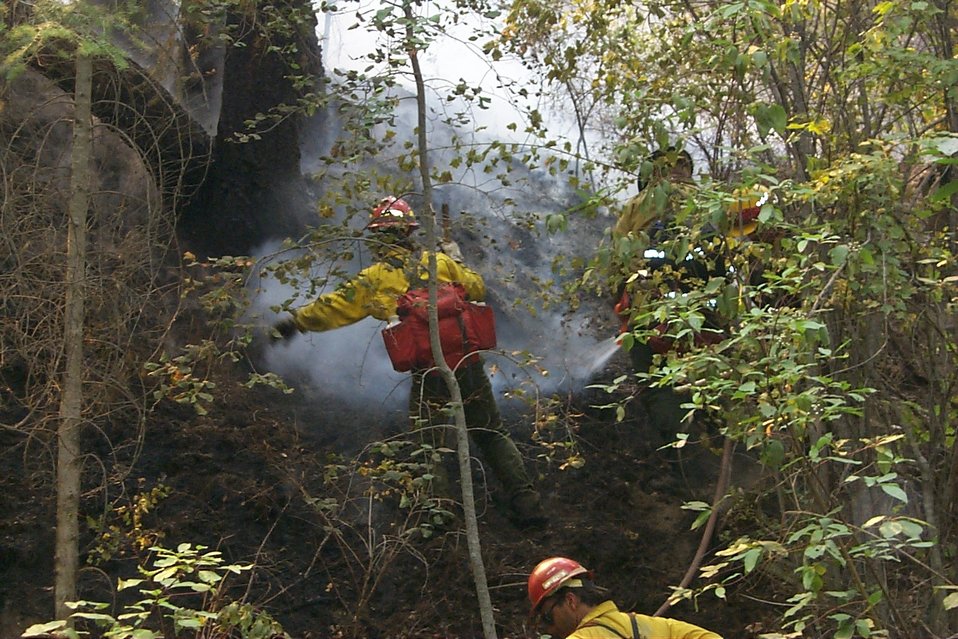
Fire fighters Fire Clearwater Fire Salmon Field Office USRD Upper Snake River District